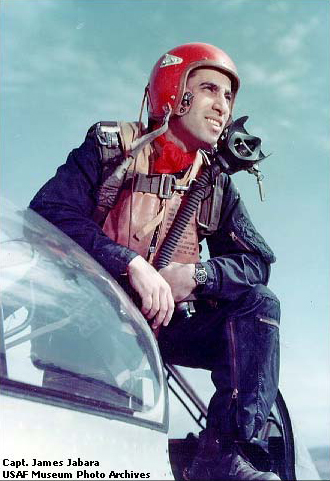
Lieutenant Colonel James Jabara

1950's -- James Jabara, the world's first jet ace, was born in Muskogee, Okla., October 1923. Jabara was the prototypical fighter pilot, although perhaps not at first glance. Standing 5 feet 5 inches tall, Jabara was nevertheless larger than life. He was determined to enter pilot training, and he did. He was equally determined to become an ace in his F-86 Sabre, and he did.